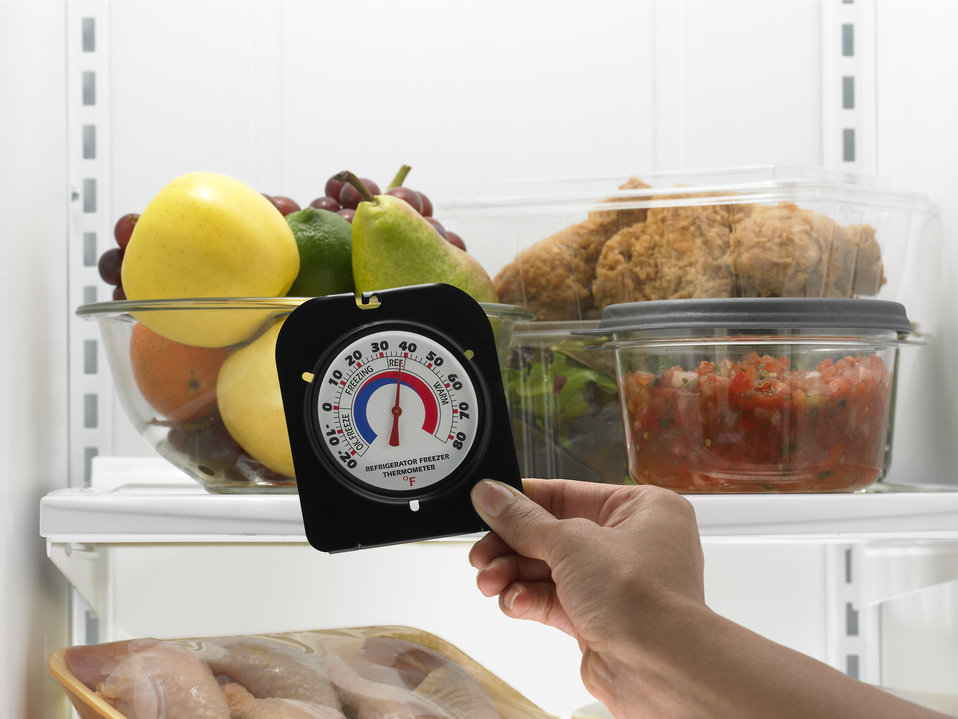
Keep an appliance thermometer in your refrigerator to check the temperature. The temperature in the refrigerator should be set at 40 °F or below.